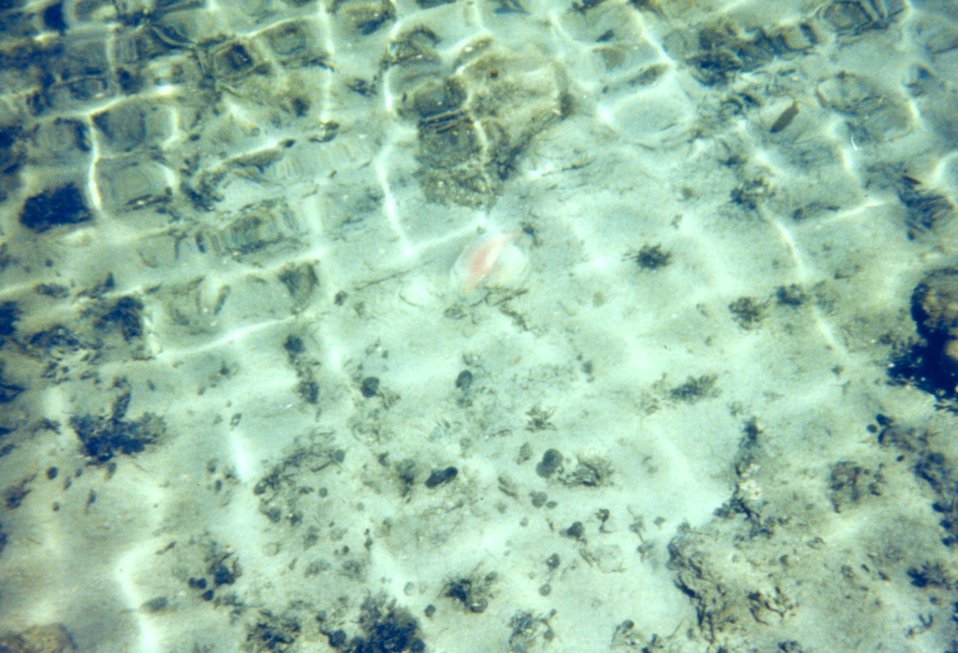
Sun reflections and sea life in the moat at Fort Jefferson